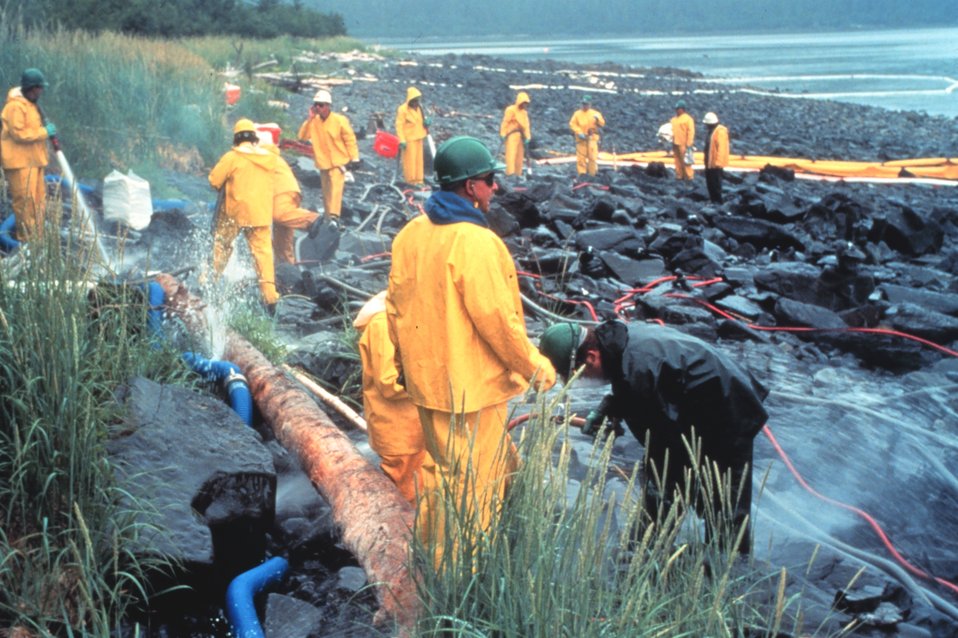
Pressure cleaning rocks on intertidal zone.